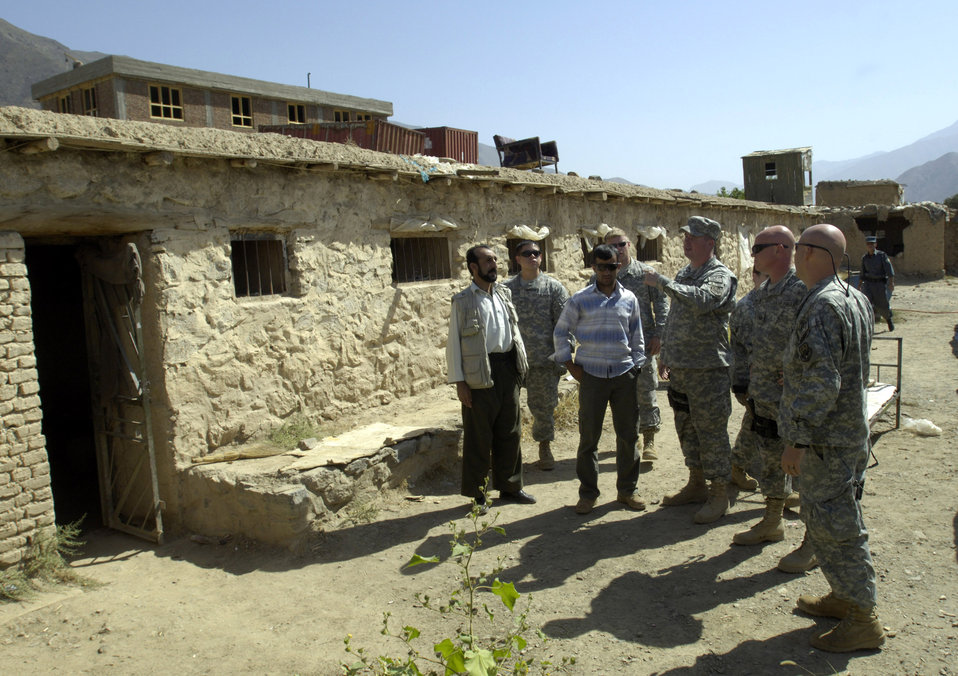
Panjshir PRT

Panjshir Provincial Reconstruction Team commander Lt. Col. Christopher Luedtke (right) and Tech. Sgt. Michael Downey (third from right) discuss improving police infrastructure with Anaba district officials Aug. 6. Colonel Luedtke brought members of his PRT into the Anaba district of Panjshir province, Afghanistan, to provide training to Afghan National Police. Colonel Luedtke is deployed from Hill Air Force Base, Utah. Sergeant Downey a security forces craftsman deployed from the Pentagon, Washington, D.C. The Panjshir PRT stood up in 2005 and is directed by Ben Lowenthal from the U.S. State Department.